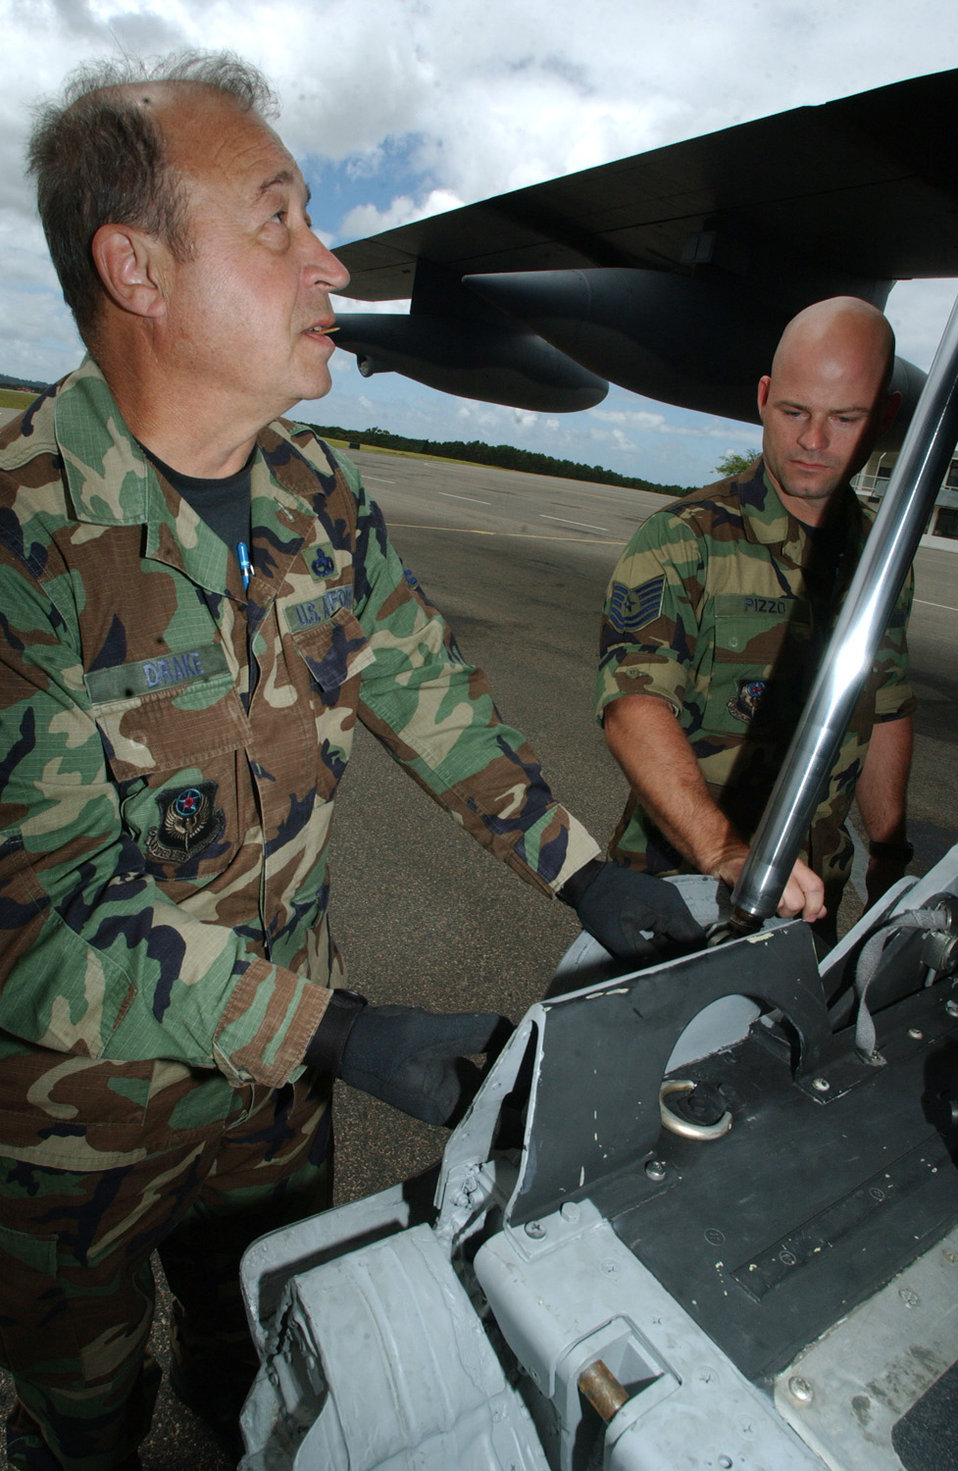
Adios Unitas

PUNTA DEL ESTE, Uruguay -- Master Sgt. Rodney Drake (left) and Tech. Sgt. Carl Pizzo inspect the cargo door ramp of their MC-130P Combat Shadow after a flight from here for Unitas 2004. The exercise, which ended Nov. 17, is the largest and longest-held naval exercise in the Americas. The Airmen are assigned to the 719th Maintenance Squadron at Eglin Air Force Base, Fla.